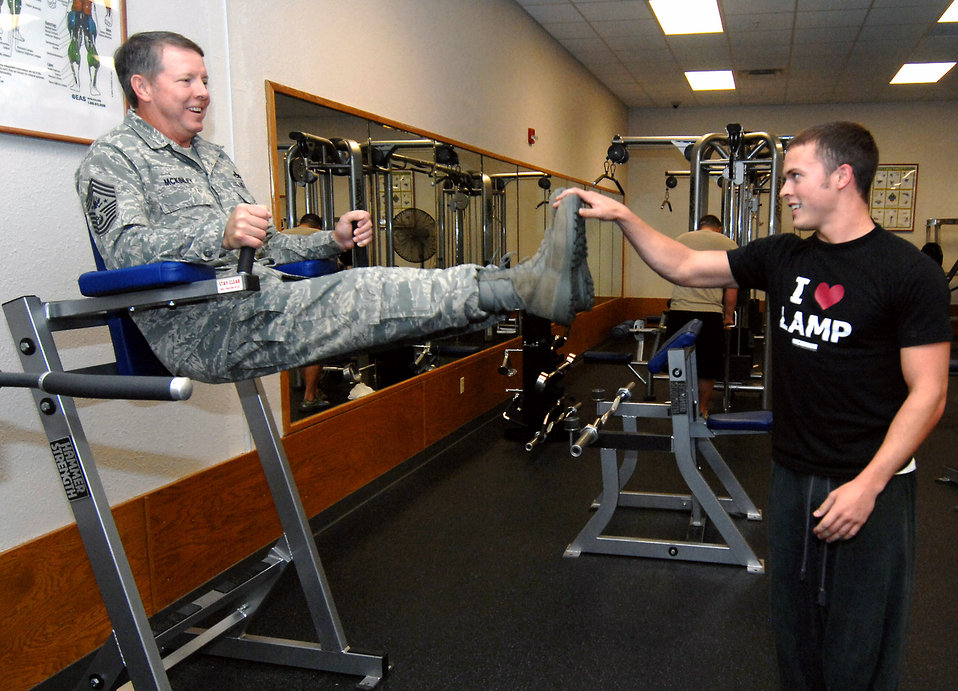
You can do one more!

At Minot Air Force Base, N.D., Chief Master Sgt. of the Air Force Rodney J. McKinley does 20 leg-lifts as he takes a moment to workout with contractor Troy McClure at the base fitness center Oct. 8. Chief McKinley's three-day visit marks his first trip to Minot AFB as CMSAF.